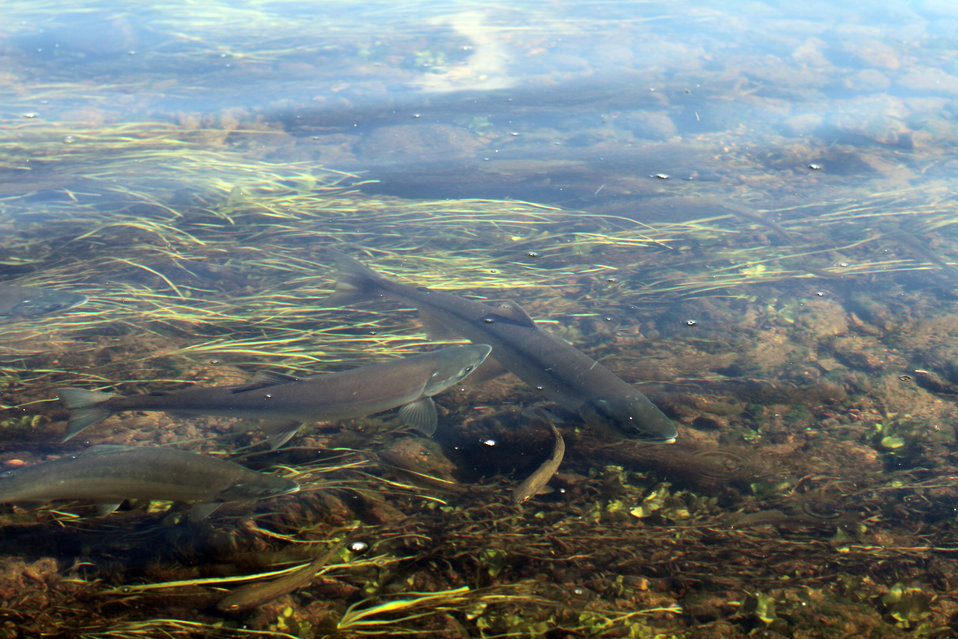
Rainbow trout mingling with Adult salmon spawners, Fish Creek Alaska

USFWS/Katrina Mueller